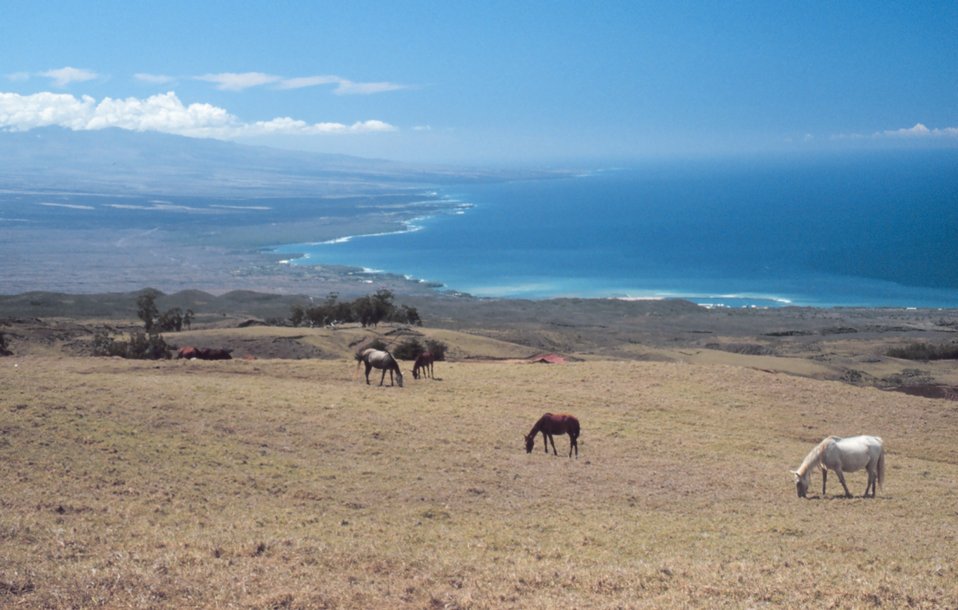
Horses in paradise - on the Parker Ranch.